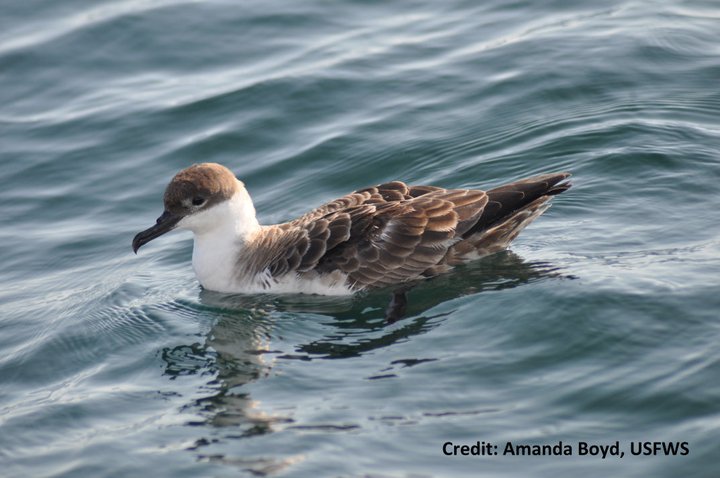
Greater Shearwater

A greater shearwater at the Nantucket National Wildlife Refuge, MA.